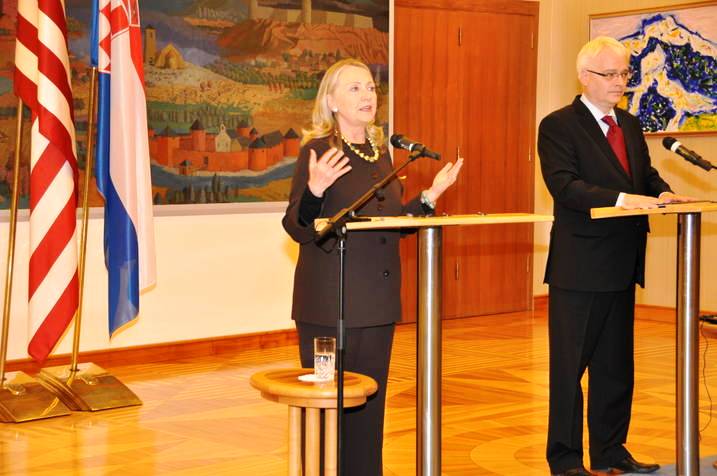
Secretary and Croatian President Josipovic Address Reporters

U.S. Secretary of State Hillary Rodham Clinton and Croatian President Josipovic hold a joint press conference in Zagreb, Croatia, October 31, 2012.